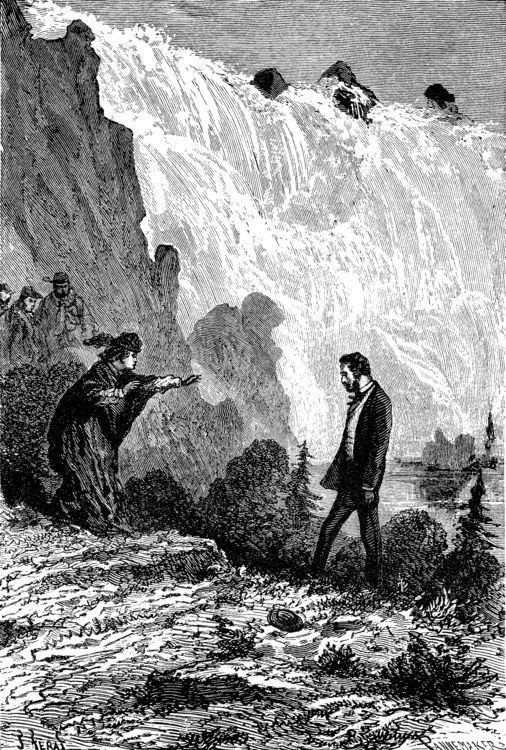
An illustration from Jules Verne's novel 'A Floating City' (1869) drawn by Jules Férat. Polski: Ilustracja powieści Juliusza Verne'a 'Pływające miasto' (1869) autorstwa Julesa Férata. Français : Jules Verne: 'Une Ville flottante' (1869), dessins par Jules Férat. Orginal text: Français : « Fabian ! » s’écria-t-elle.